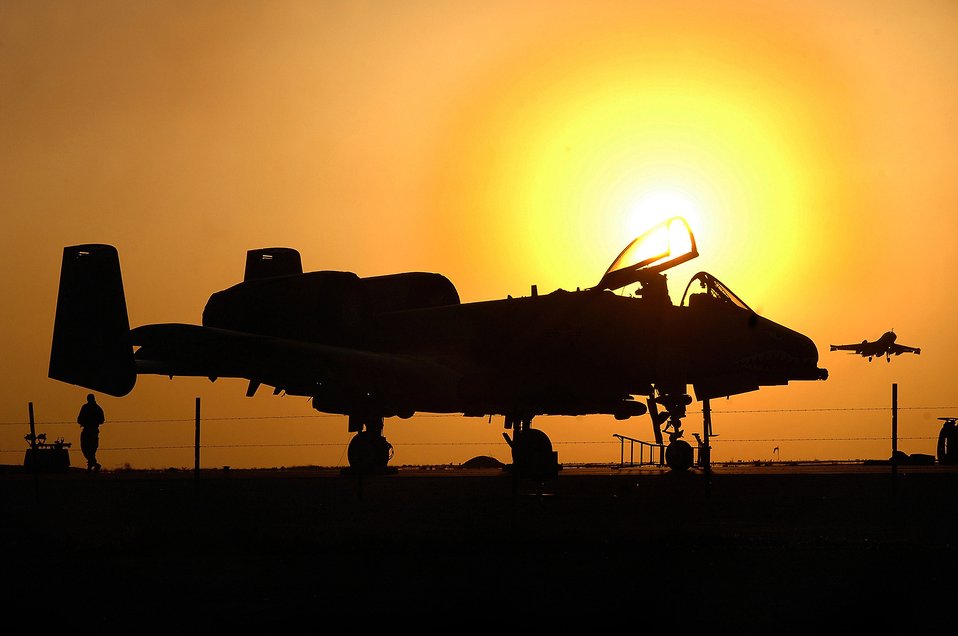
Oct. 1 airpower summary: A-10s bomb anti-Afghan forces

An A-10 Thunderbolt II, like this one, performs sorties daily in Southwest Asia. A-10s employ a wide variety of conventional munitions, including general purpose bombs, cluster bomb units and laser guided bombs.